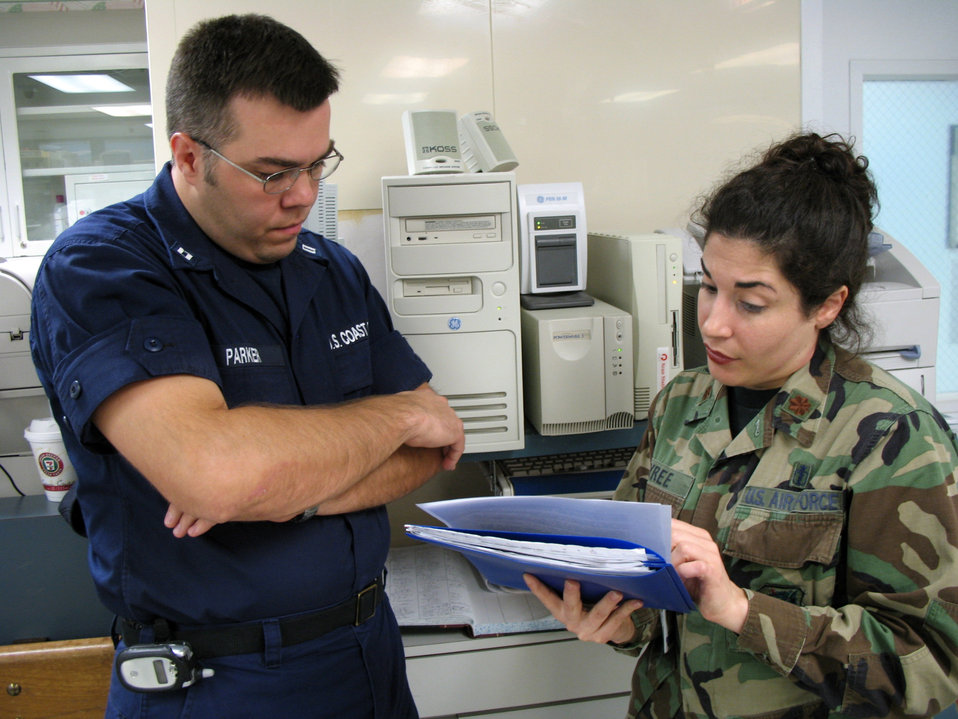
ECMO medical team transports newborn from Puerto Rico

Maj. (Dr.) Melissa Tyree discusses Extracorporeal Membrane Oxygenation procedures with U.S. Coast Guard Lt. Seth Parker for his son, Stuart, on Friday, July 21, in San Juan, Puerto Rico. An ECMO team comprised Air Force and Army medical specialists from the Wilford Hall Medical Center at Lackland Air Force Base, Texas, flew to Puerto Rico to transport Stuart to San Antonio for more advanced care. Major Tyree is the neonatal doctor and team chief of the ECMO team that flew to Puerto Rico to treat Lieutenant Parker's son.